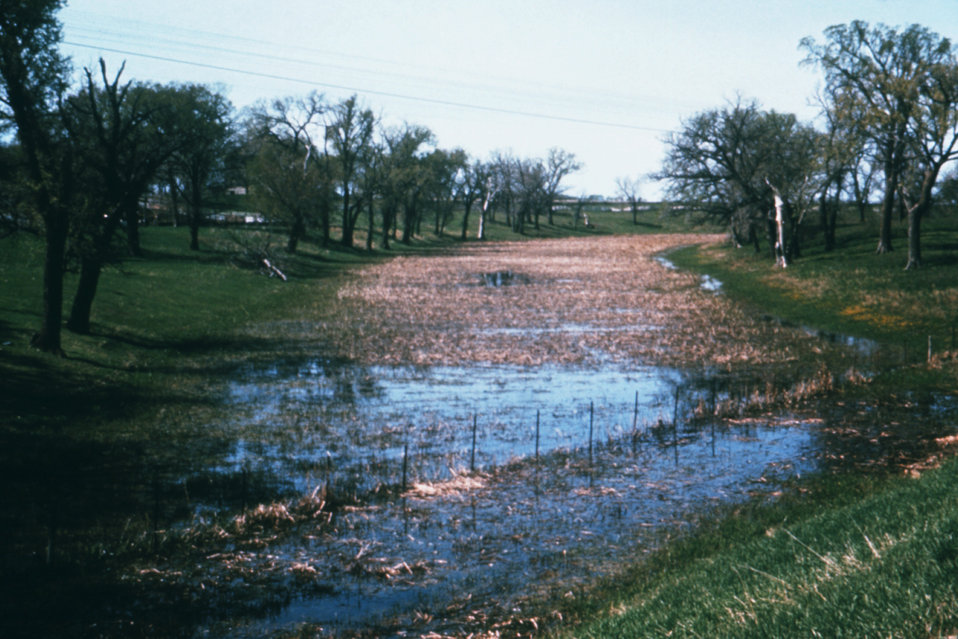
This 1976 photograph shows a U-shaped bend, or ''oxbow'' in the Red River of the North in Minnesota.